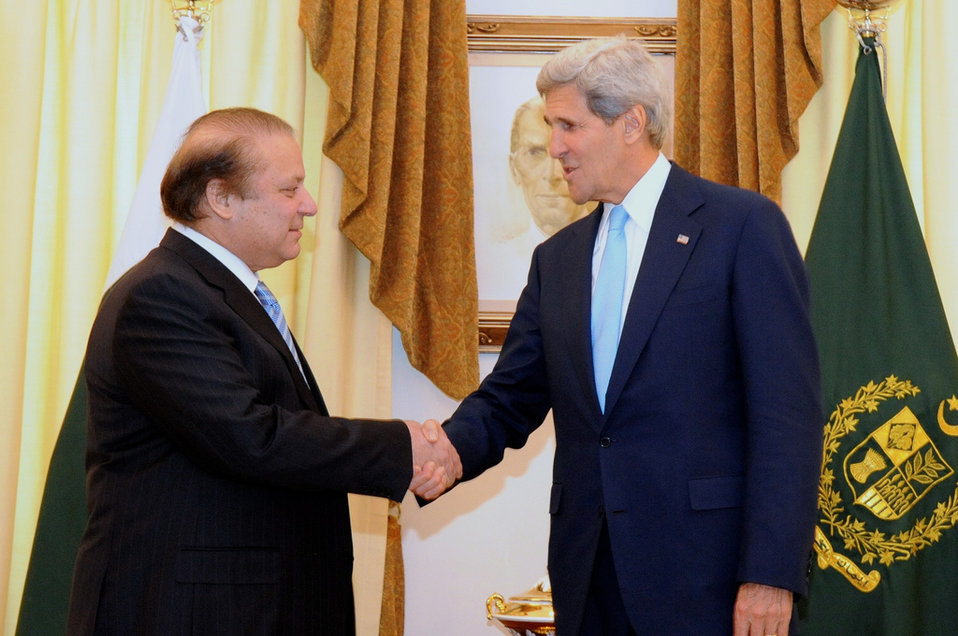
Secretary Kerry meets with Pakistani Prime Minister Sharif

Pakistani Prime Minister Nawaz Sharif greets U.S. Secretary of State John Kerry before their meeting in Islamabad, Pakistan, on August 1, 2013.